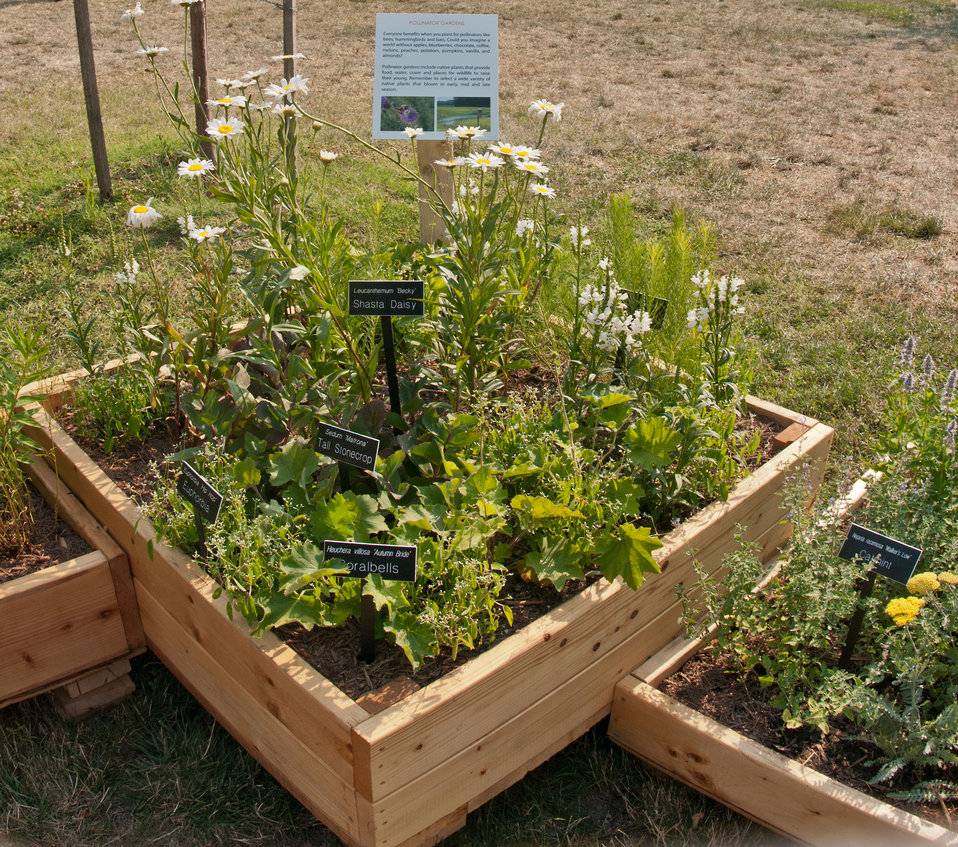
U.S. Department of Agriculture (USDA) People’s Garden Initiative Pollinator Gardens provide benefits to everyone at the 2012 Smithsonian Folklife Festival, on the National Mall in Washington, D.C., on Thursday, June 28, 2012. The flowers attract bees, hummingbirds and bats that carry pollen from flower to flower making it possible for food plants to produce their fruit and vegetables. The People’s Garden Initiative reminds folks to select a variety of native plants the bloom in early, mid and late season. One of the three themes this year is “Campus and Community.” It celebrates the 150 years of the USDA and the Land-Grant University System. The U.S. Department of Agriculture (USDA) and the Land-Grant system extend education across the country, contributing to American agriculture success and rural prosperity. “Campus and Community” has demonstrations, discussions, hands-on activities, and entertainment to that showcase the many ways that this partnership works to improve American agriculture and rural life.